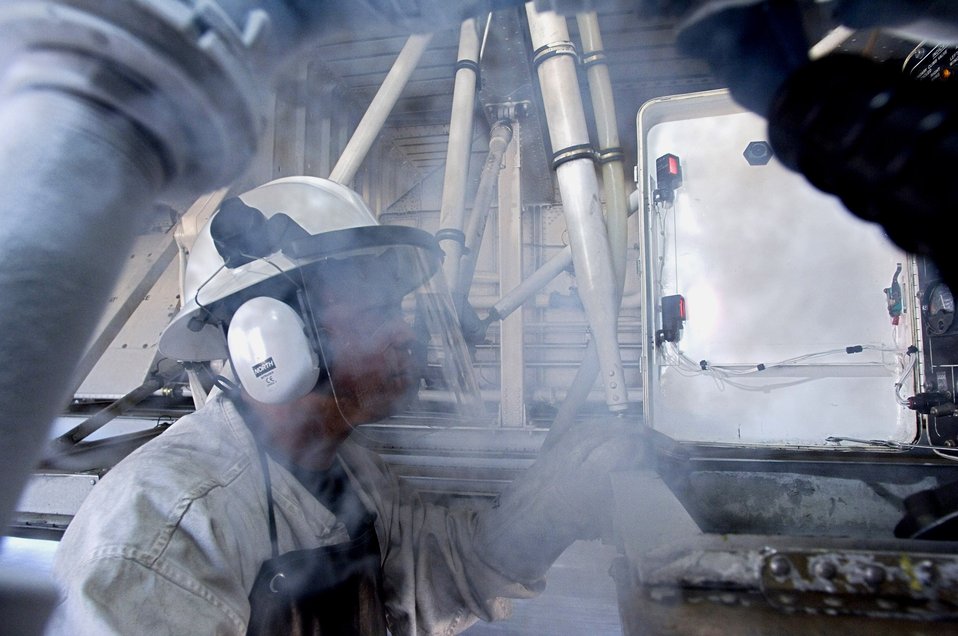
MORON AIR BASE, Spain -- Tech. Sgt. Ranill Hirang of the 4th Expeditionary Air Mobility Squadron monitors the gauges as liquid nitrogen is pumped into a C-5 Galaxy here. Sergeant Hirang is deployed from Travis Air Force Base, Calif., where he is assigned to the 60th Equipment Maintenance Squadron.